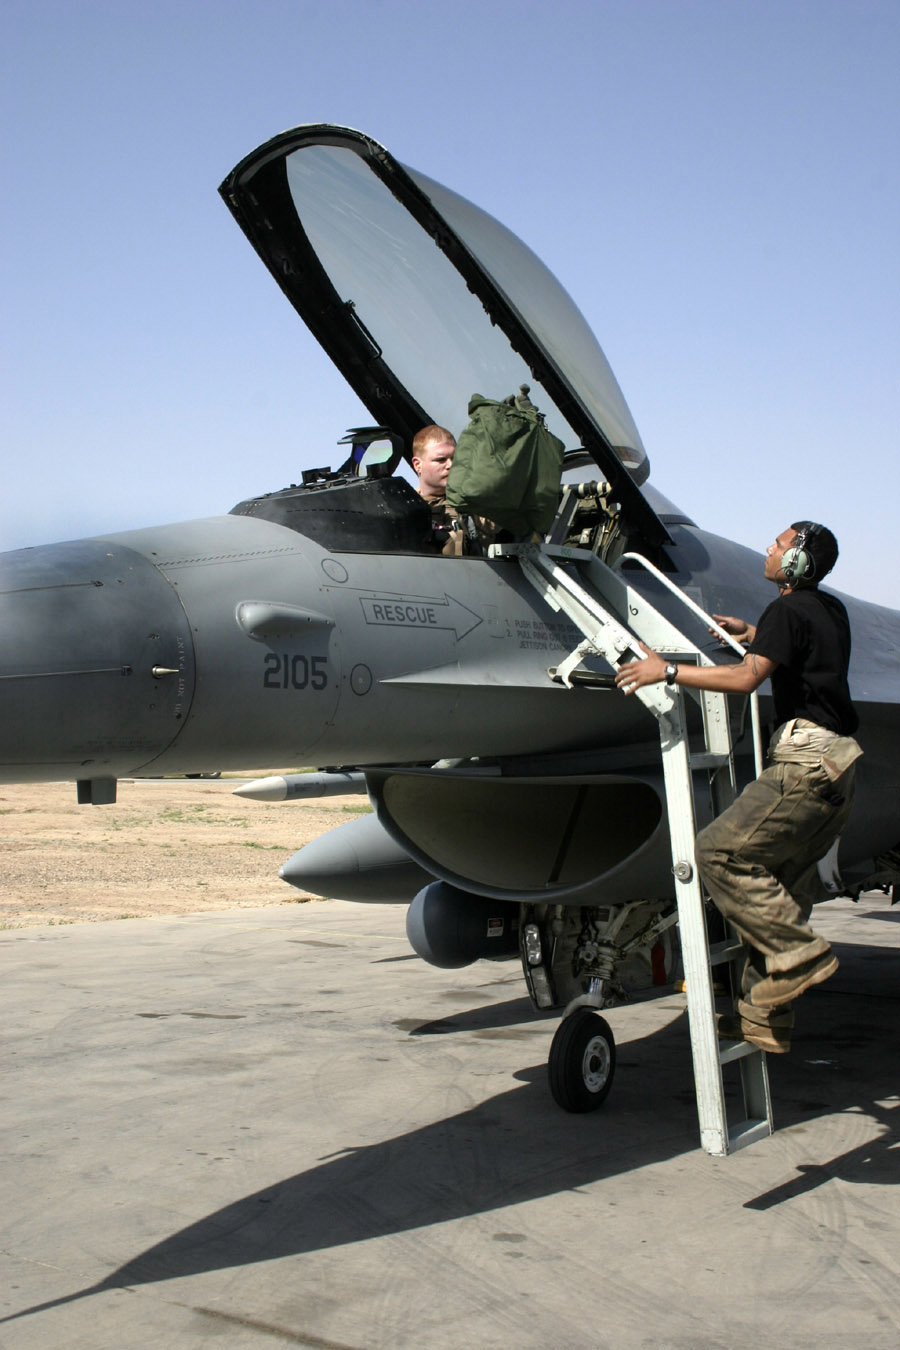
F-16 crew chiefs combat odds to keep jets in flight

BALAD AIR BASE, Iraq -- Senior Airman Frankie Jordan helps Capt. Andy Stockman with his bag upon the captain's return from a mission. Airman Jordan is a crew chief with the 332nd Expeditionary Aircraft Maintenance Squadron here, and Captain Stockman is an F-16 Fighting Falcon pilot with the 34th Expeditionary Fighter Squadron.